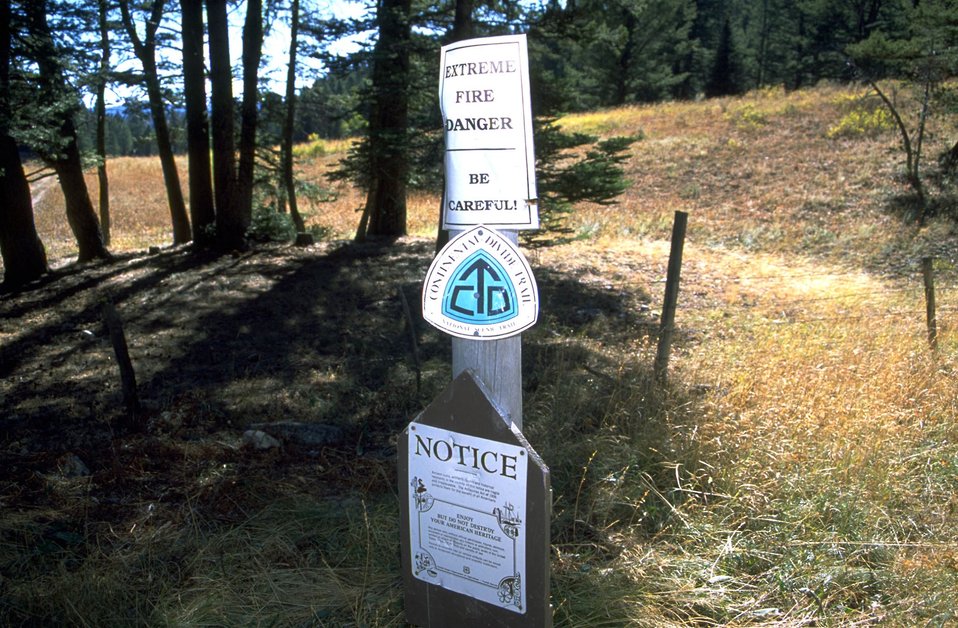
Sign marking the continental divide trail.